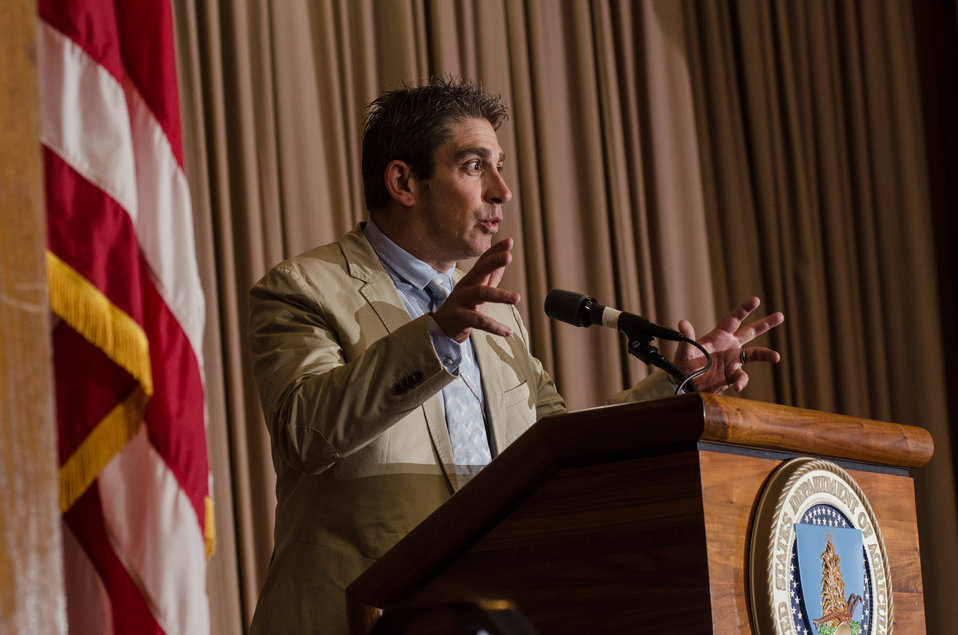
Keynote Speaker Poet Richard Blanco talks about differences in culture, language, and his childhood, with the audience gathered and viewing the 2013 National Hispanic Heritage Month ”Hispanics: Serving and Leading our Nation with Pride and Honor,” on Thursday, Sept. 19, 2013, in the Jefferson Auditorium, USDA Headquarters, Washington, D.C. Mr. Blanco stands as the youngest, first Latino, and first openly gay person to serve as the Presidential inaugural poet, on January 21 of this year.